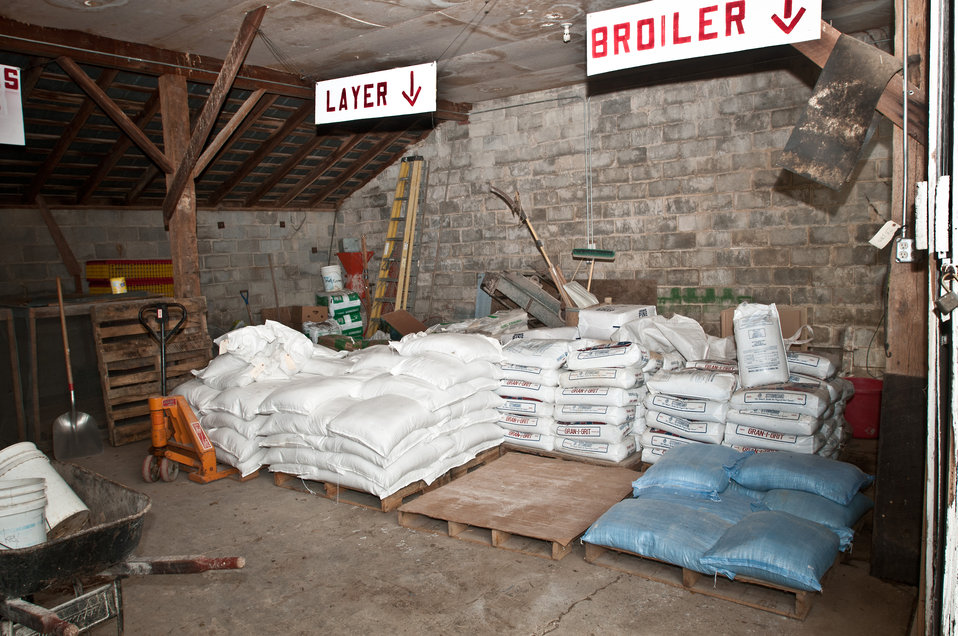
Organic feeds suppliment the pasture grass diet of layer and broiler chickens for better health and digestion at Nick’s Organic Farm, in Adamstown, MD, on Friday, July 12, 2013. The farm, owned by Nick Maravell, produces Black Angus beef, chicken, turkey, eggs, hay, soybeans, corn, alfalfa, orchard grass, rye; and other crops. The cattle are100% grass-fed receiving certified organic pasture, certified organic hay (in winter), water and mineral salts mixed with sea kelp. The cattle are not fed hormones, antibiotics or animal products. Poultry feed from grain is ground from organic grain. The poultry also graze on organic pastures. The farm has conducted on-farm research with federal, state and non-profit agencies to refine organic practices.